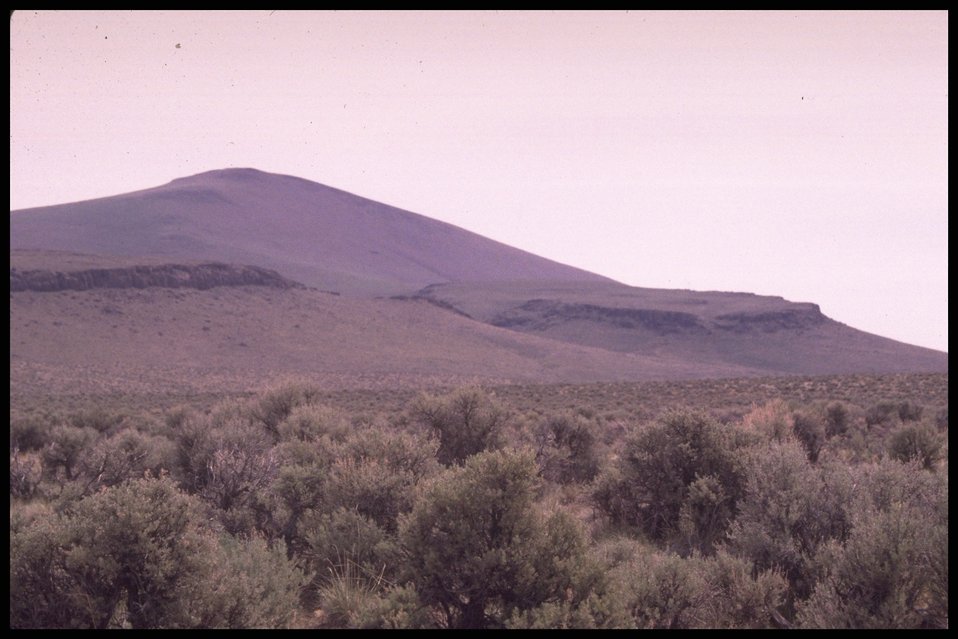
Lakeview District desert.